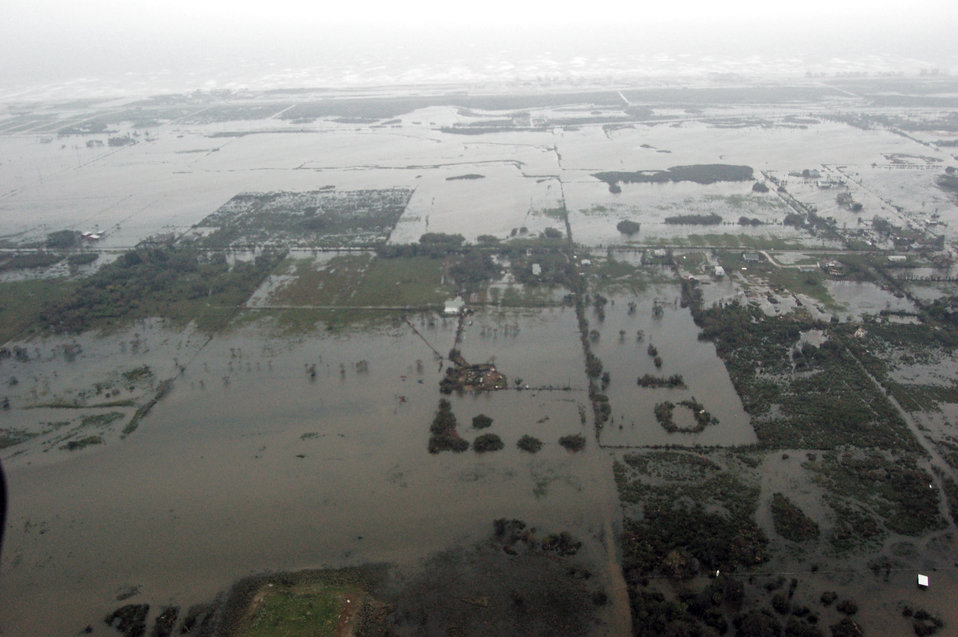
Airmen survey Ike damage

Airmen aboard an HH-60G Pave Hawk survey the damage caused by Hurricane Ike Sept. 13 around Galveston, Texas. Airmen from across the Air Force are deployed to the 331st Air Expeditionary Group at Randolph Air Force Base, Texas, to assist with rescue operations.